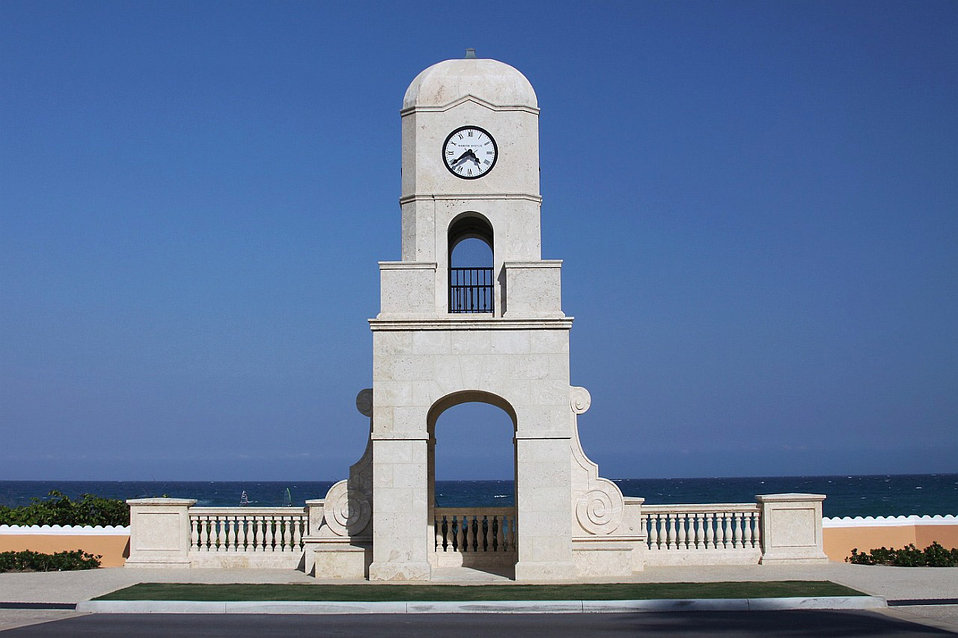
Clock tower

Palm beach fl clock tower.